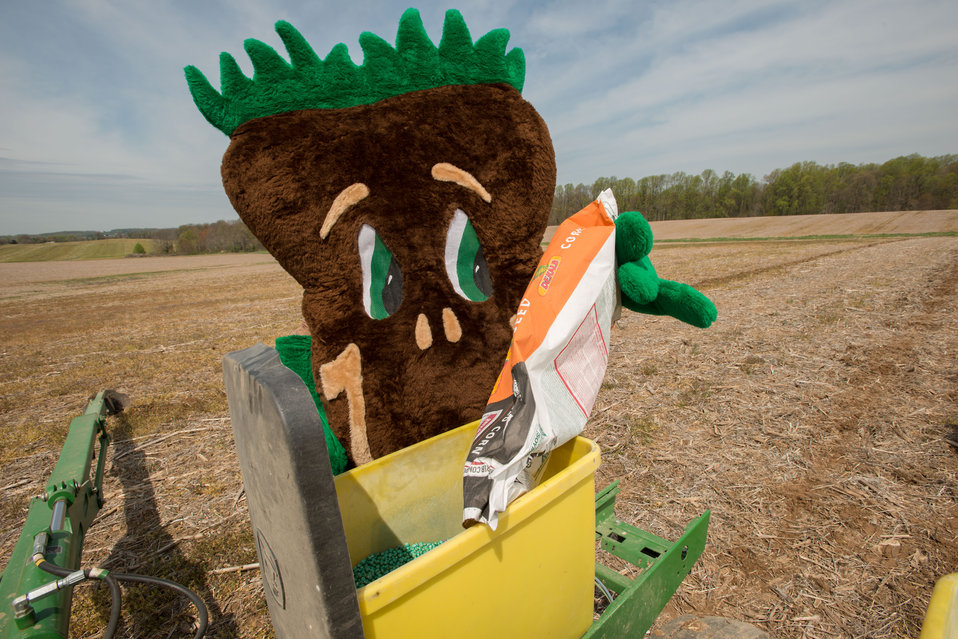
The U.S. Department of Agriculture’s (USDA) Natural Resources Conservation Service (NRCS) mascot Sammy Soil on the Sunny Ridge Farm in Laytonsville, MD on Monday, Apr. 28, 2014. The Sunny Ridge Farm owned by the Stabler family uses a number of conservation practices to promote soil health and water quality. No-till cropping systems use cover crops that help water soak deep into the soil and machines work lightly on top of the soil preserving vertical pores that are water’s pipeline to the roots. Cover crops prevent erosion, improve soil health, hold water, supply nutrients, and suppress weeds and pests. Fenced waterways keep livestock away from the streams and drainage to low points of fields, which allows grass, trees and other vegetation to grow. The plants take up nutrients from the livestock effluent, reducing pollution to waterways. The farm also has a well-designed agrichemical facility for an environmentally safe area to handle and store tanks of on-farm chemicals.